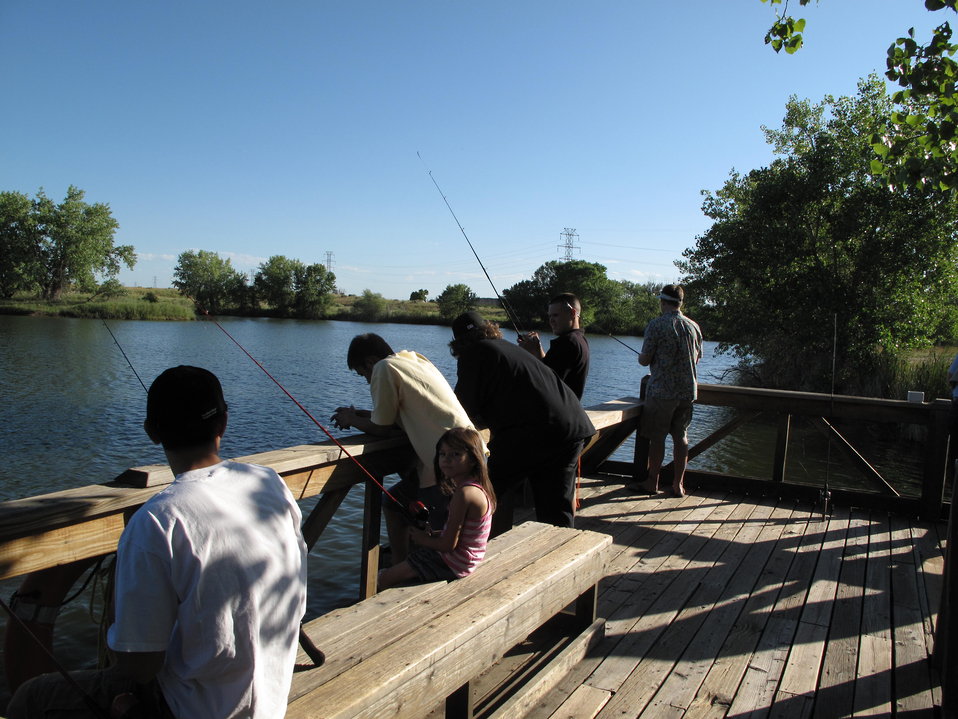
Fishing at the Rocky Mountain Arsenal